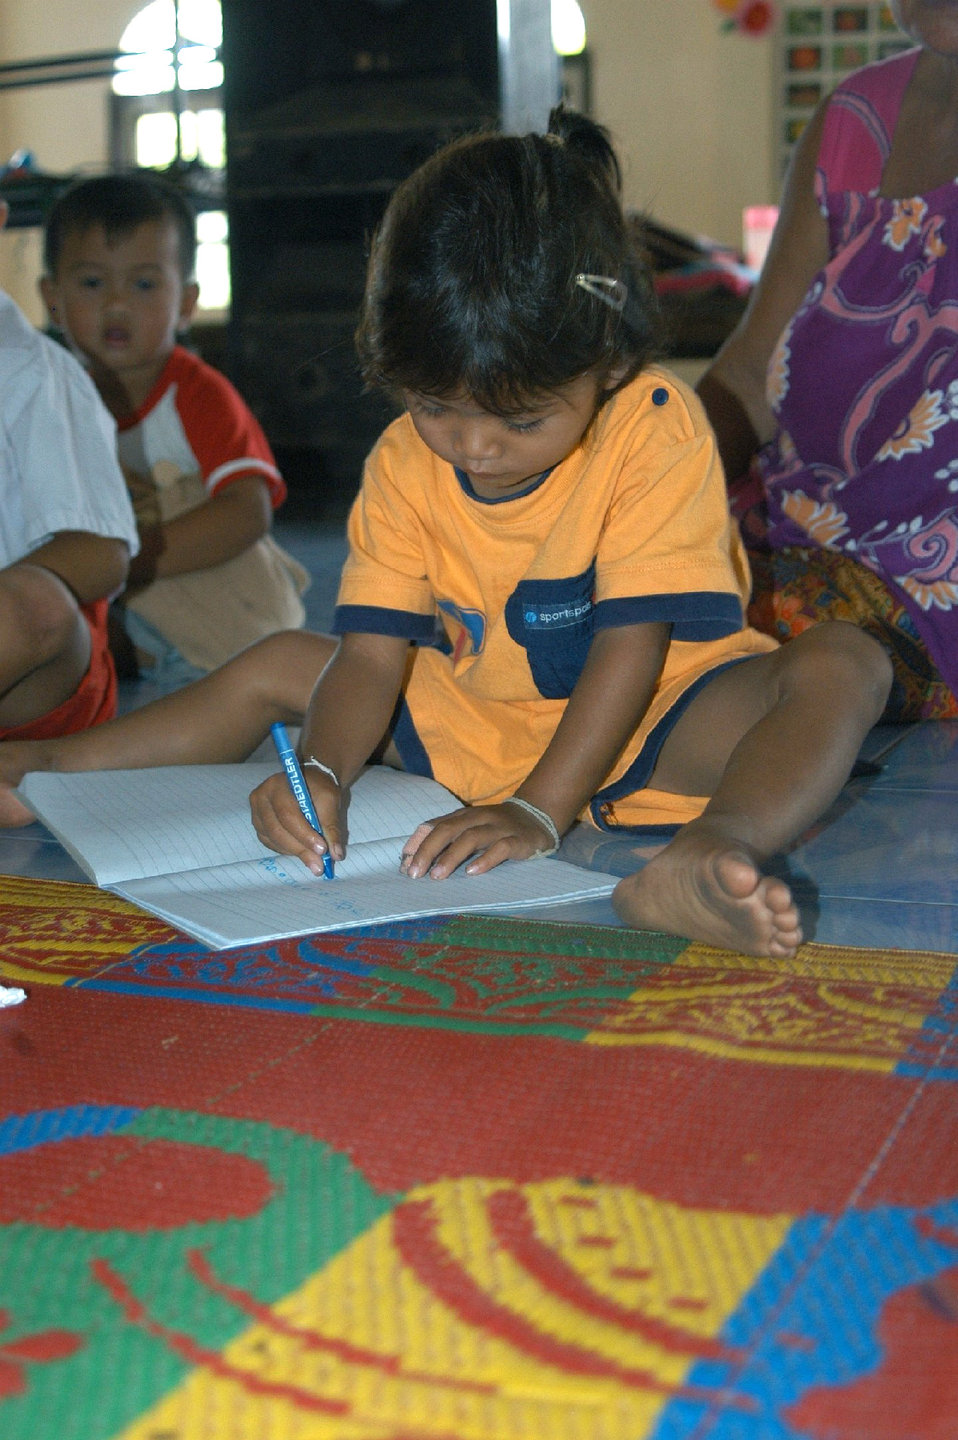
Airmen help rural Thai preschool

UDORN THANI, Thailand -- A student at a preschool near here loses no time in trying her new crayons and coloring book. Airmen from the 353rd Special Operations Group at Kadena Air Base, Japan, visited the preschool to donate supplies and improve the playground.